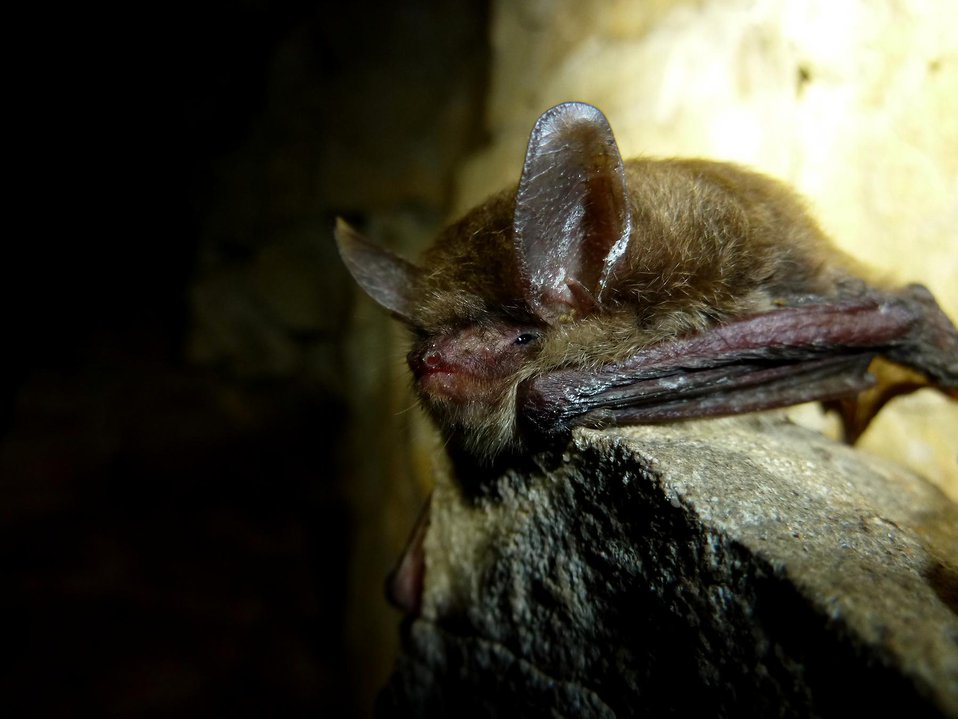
Northern long-eared bat with visible symptoms of white-nose syndrome.